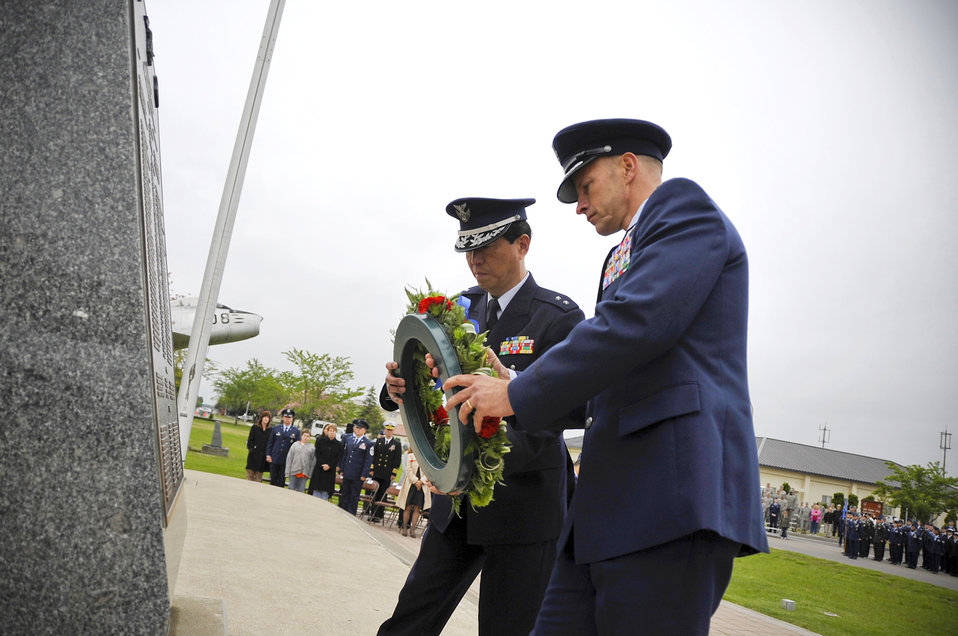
Misawa AB community gathers for Memorial Day retreat

Col. R.C. Craig and Japan Air Self-Defense Force Maj. Gen. Kozo Ishino lay the ceremonial wreath at the base of the U.S. and Japanese flags during the Memorial Day retreat ceremony May 27, 2010, at Misawa Air Base, Japan. The ceremony was held in honor of servicemembers who died while defending freedom in wars past and present. Colonel Craig is the 35th Fighter Wing vice commander. General Ishino is the Northern Air Defense Force vice commander.